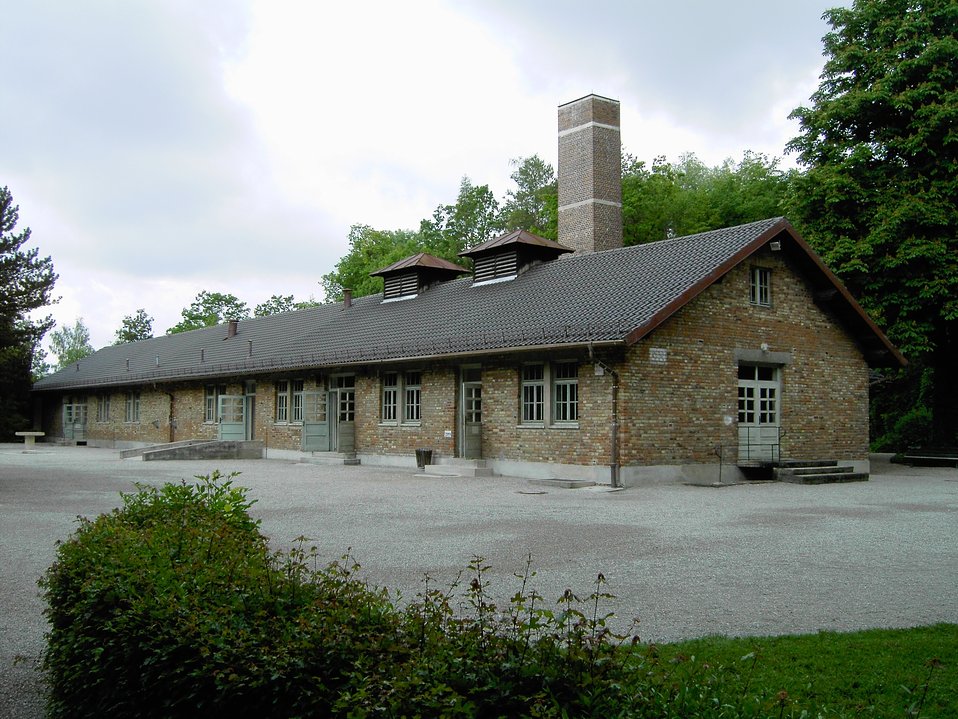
A photo of the Dachau Crematorium